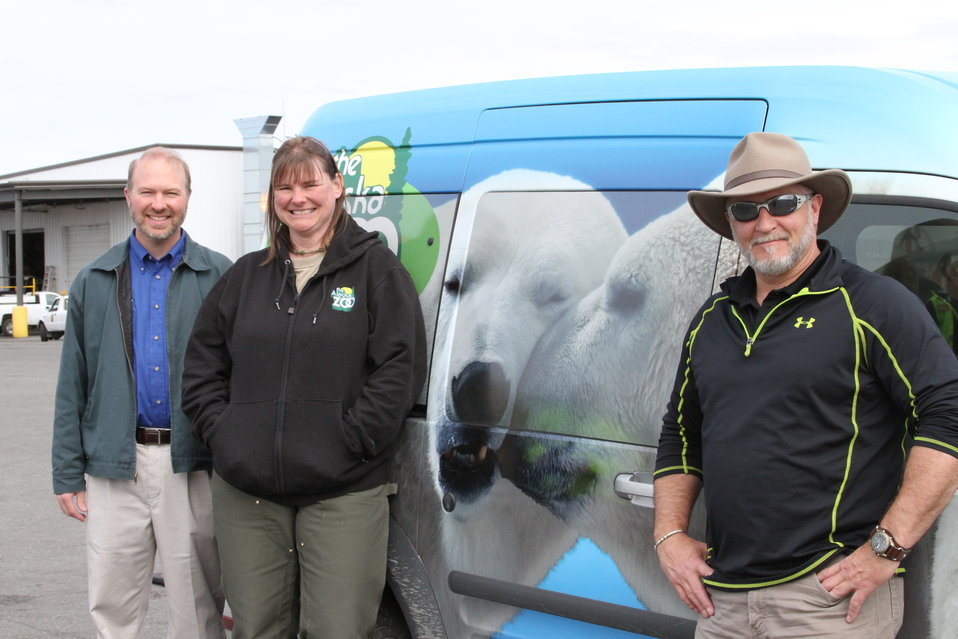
volle jensen volle

Kali will be accompanied by Alaska Zoo Executive Director Patrick Lampi and Zoo Curator Shannon Jensen along with Dr. Kurt Volle, a veterinarian with the Buffalo Zoo.